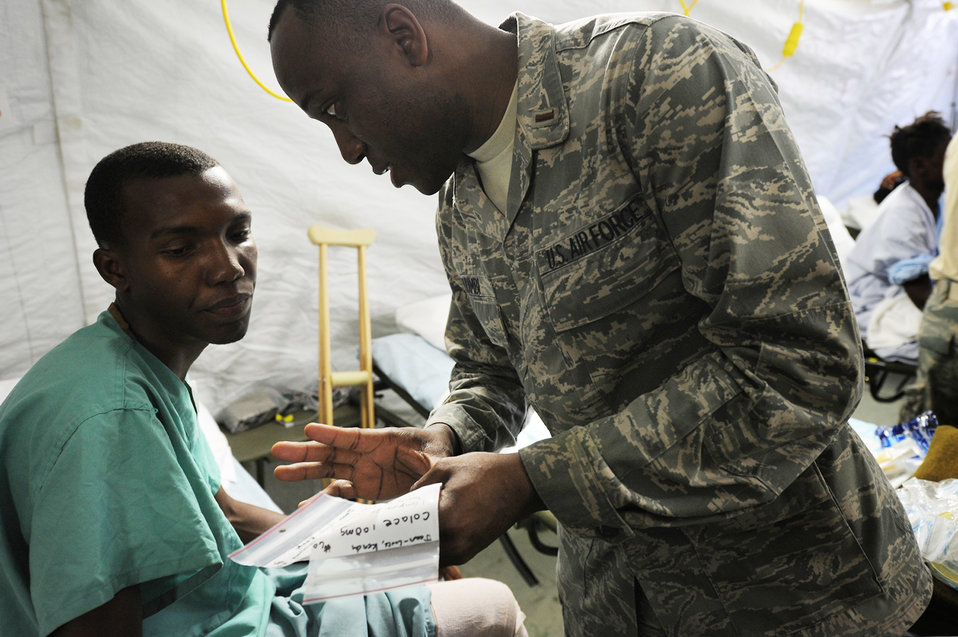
Airmen provide care, compassion to people of Haiti

An Airman from Travis Air Force Base, Calif., treats an earthquake survivor at an expeditionary medical facility Feb. 3, 2010, located along the harbor of Port-au-Prince, Haiti. A 7.0-magnatude earthquake struck Haiti Jan. 12, leaving thousands of Haitians displaced and without access to food, water and vital medical care.